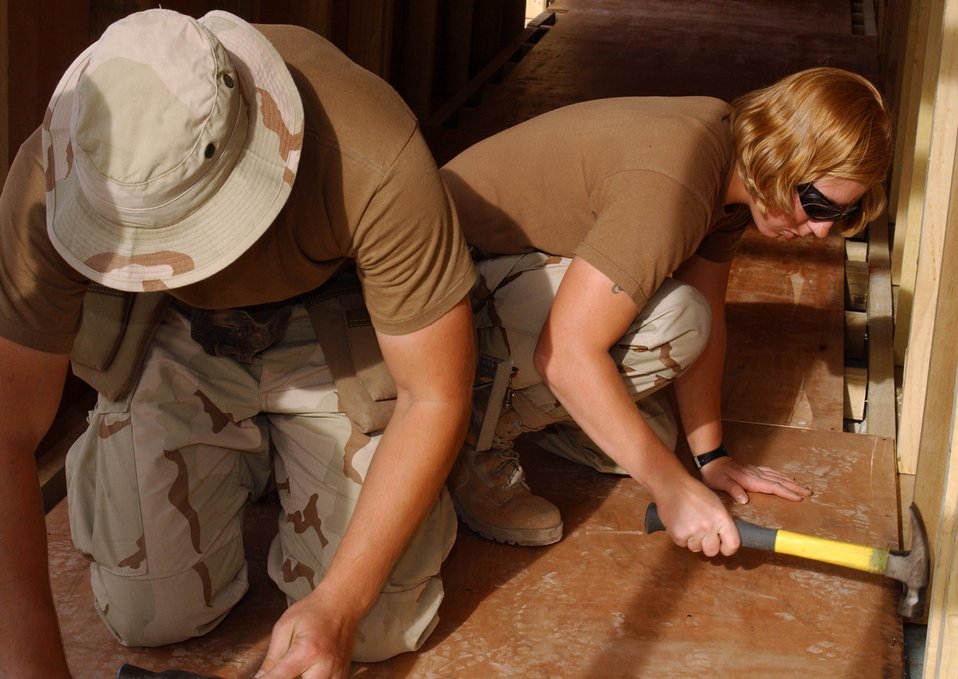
Flooring it

ALI BASE, Iraq (AFPN) -- The base fitness center is expanding with the addition of a separate aerobics room. Staff Sgt. Jeffrey Denton, left, and Airman 1st Class Charlene Port secure a piece of flooring leading to the doorway. Both are with the 407th Expeditionary Civil Engineer Squadron